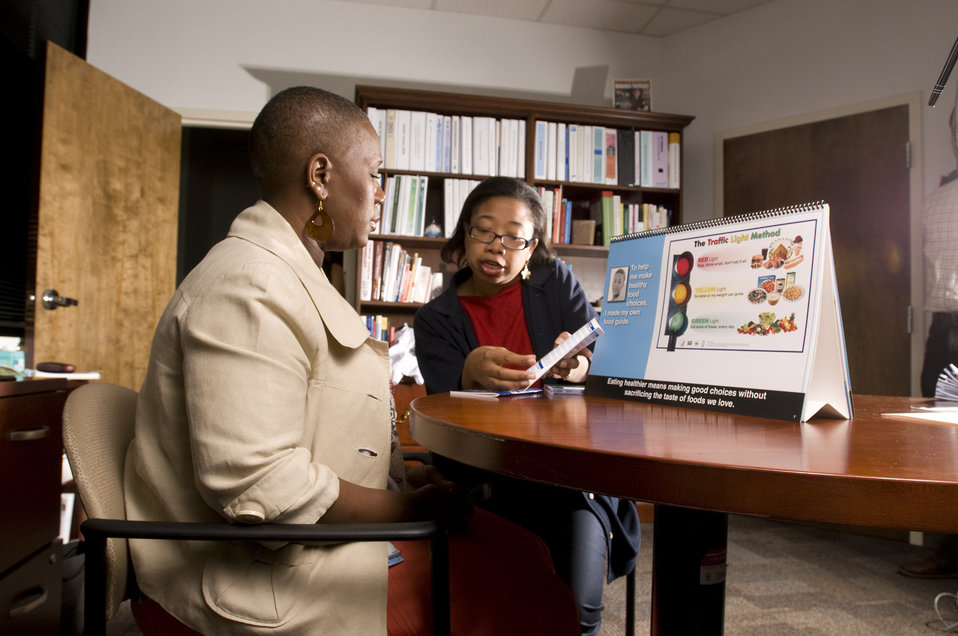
This image depicts a person with diabetes in the foreground listening to a community health worker familiar with the necessary diet needed to maintain control over the detrimental effects of this disease. The health worker was using a flip chart that, for the moment, was turned to a page discussing the use of the 'Traffic Light Method' to label foods. Here, the dietary specialist was providing answers to questions posed by the patient regarding the three food groups.